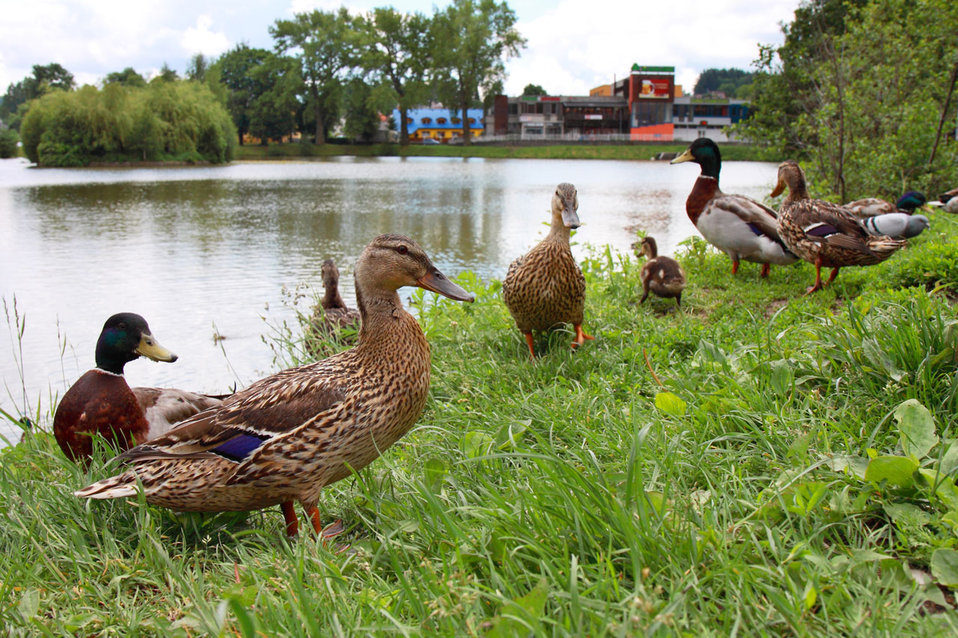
Mallards

Mallard ducks on river bank.